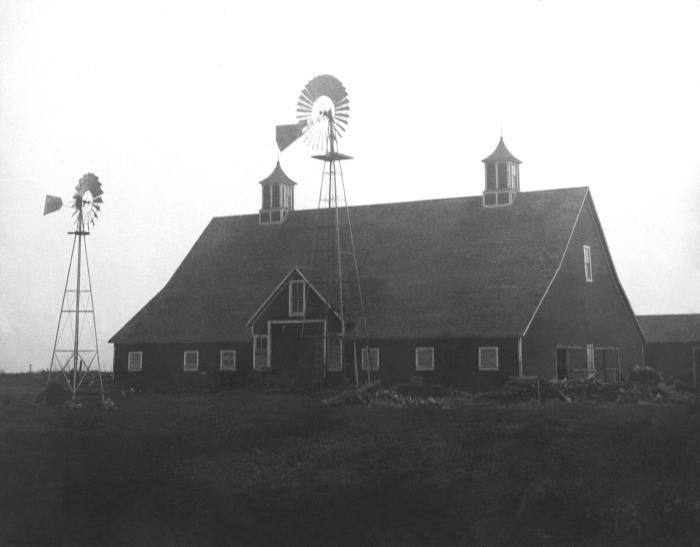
This 1909 historic photograph was one of a series of images, the purpose of which was to show how a polluted water supply could be caused by surface reservoirs common to Minnesota farms. These instructional photos were used by the Minnesota Board of Health to train public health workers.